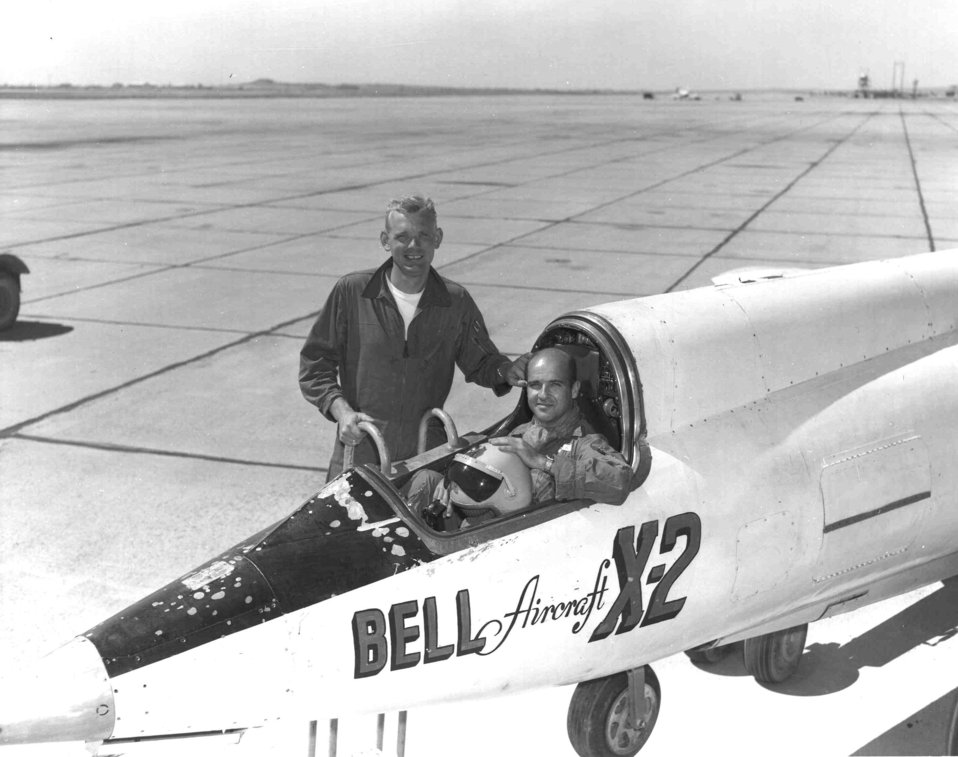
Captain Iven C. Kincheloe Jr.

1950's -- On Sept. 7, 1956, Capt. Iven C. Kincheloe (left) became the first pilot to climb above 100,000 feet as he rocketed to a peak altitude of 126,200 feet. Just 20 days later, making his first flight in the research craft, Capt. Milburn G.